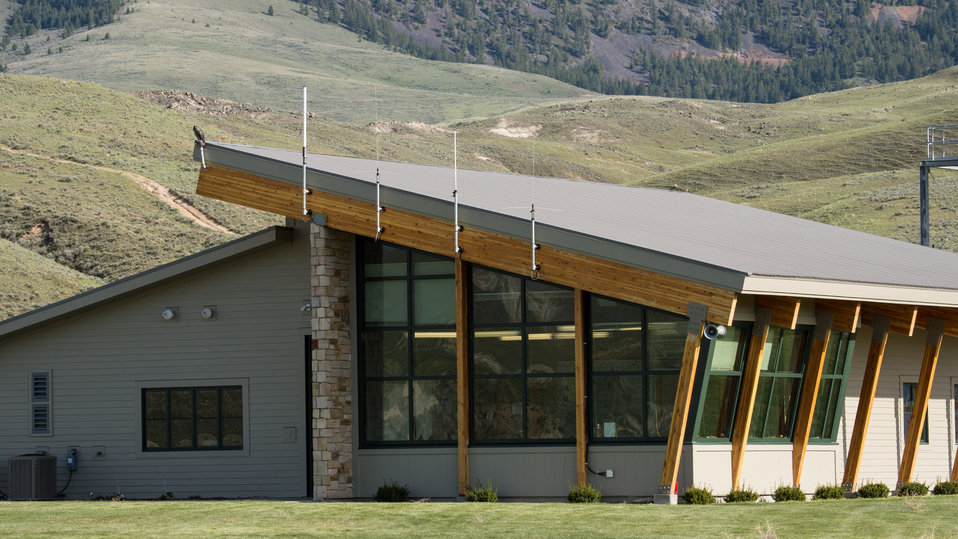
The Salmon Air Base communications center is located in Salmon, ID, where veteran wildland firefighter rappellers train and prepare during the U.S. Department of Agriculture (USDA) U.S. Forest Service (USFS) National Helicopter Rappel Program’s Rappel Academy on Wednesday, May 14, 2014. From May 12, 2014, 72 veteran rappellers from all over the nation, 30 support staff, and three helicopters with flight crews attend the training at Salmon Air Base. Participants will rappel into the Perreau Creek area. The annual training is delivered in accordance with the National Rappel Operations Guide; strengthen leadership, teamwork, and communications within the rappel community, and produces quality aerial delivered firefighters for use in fire and aviation operations. The USDA Forest Service National Helicopter Rappel Program’s primary mission is initial attack. Rappel crews may be utilized for large fire support, all hazard incident operations, and resource management objectives.